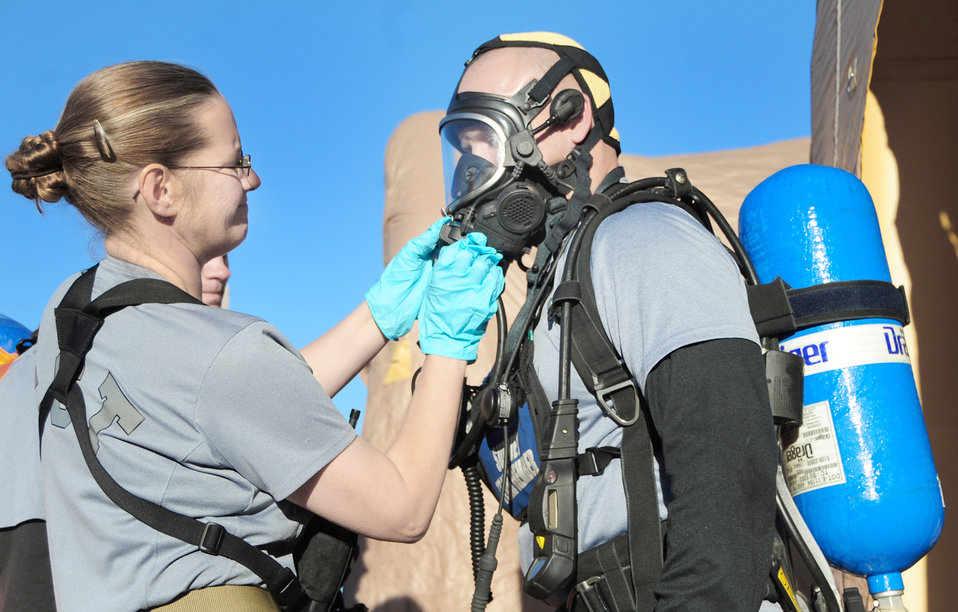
Ellsworth joint training

Staff Sgt. Danny Oaks, waits while Army Sgt. 1st Class Marcia Hento removes his chemical protective suit during a joint training mission with Ellsworth Air Force Base, the South Dakota National Guard and the Rapid City Fire Department Nov. 4, 2010, in Rapid City, S.D. The training focused on responding to a simulated chemical, biological, nuclear, radiological or explosive incident involving a community transit bus. Sergeant Oaks is an 82nd Civil Support Team survey team member and Sergeant Hento is the 82nd CST decontamination and logistics NCO.